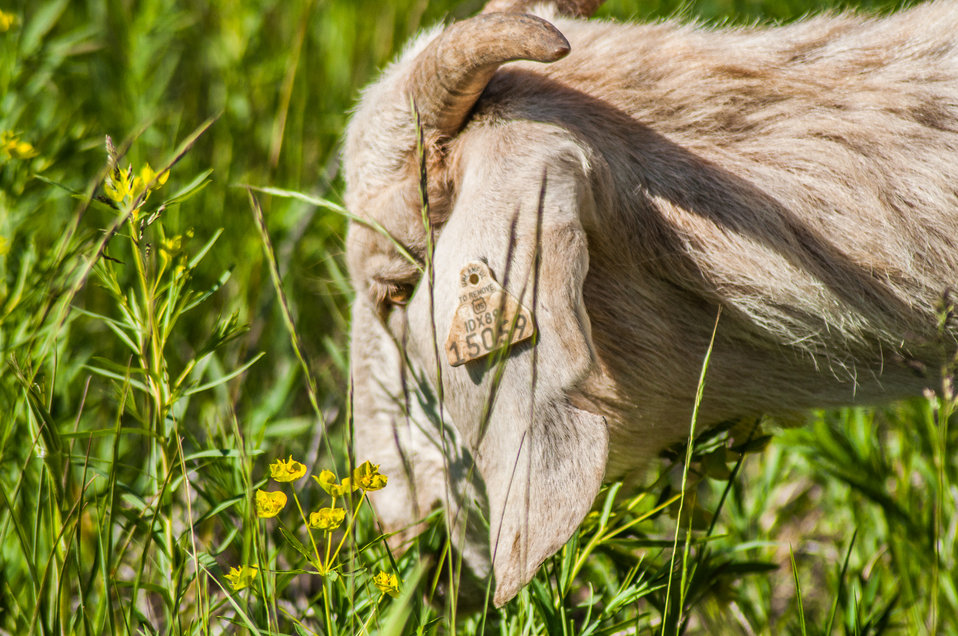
Goat landing on Bozeman Fish Technology Center

On June 8 at 5:00 p.m., 409 yearling domestic goats were off-loaded on the Bozeman Fish Technology Center (BFTC) campus. Thus begins a 3-4 year project of monitored targeted grazing and applications of friendly insects to control noxious weeds and manage brush overgrowth on property of the U.S. Fish and Wildlife Service BFTC.

Purposes of this effort are to reduce the presence of undesirable vegetation, promote restoration of native plants, and assist with fire protection by reducing burnable plant biomass.

The cooperative venture involves the U.S. Fish and Wildlife Service, Montana Outdoor Science School, Friends of the Bozeman Fish Technology Center, Gallatin Valley Land Trust, U.S. Forest Service, and Prescriptive Livestock Services. Integrated Weed Control is supplying the insects as an in-kind contribution to the project, and has applied insects on the BFTC’s 'hot spots' in previous years.